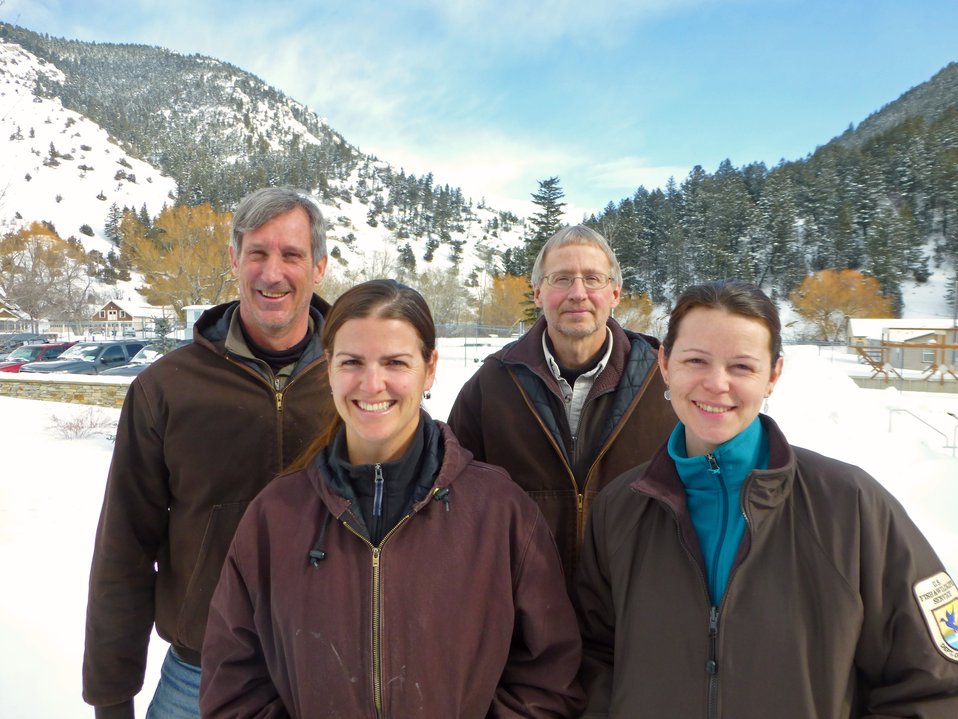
AADAPP Group Photo

Jim Bowker, Molly Bowman, Dan Carty and Niccole Wandelear, the AADAP Program's Research Team

Rachel Carson Award for Scientific Excellence (Group) – 2013